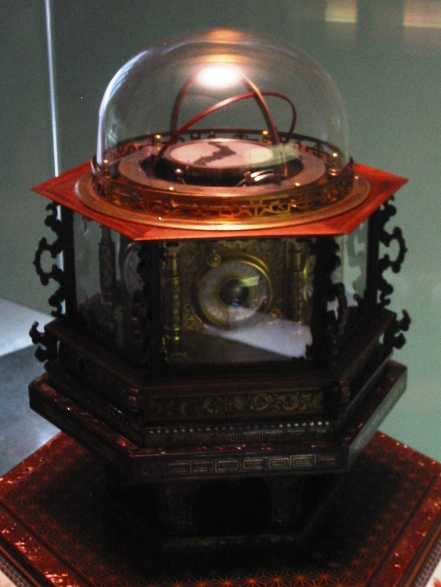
1851 Japanese-made perpetual clockwatch (Wadokei). Displayed in Tokyo National Science Museum. Taken in 2004.